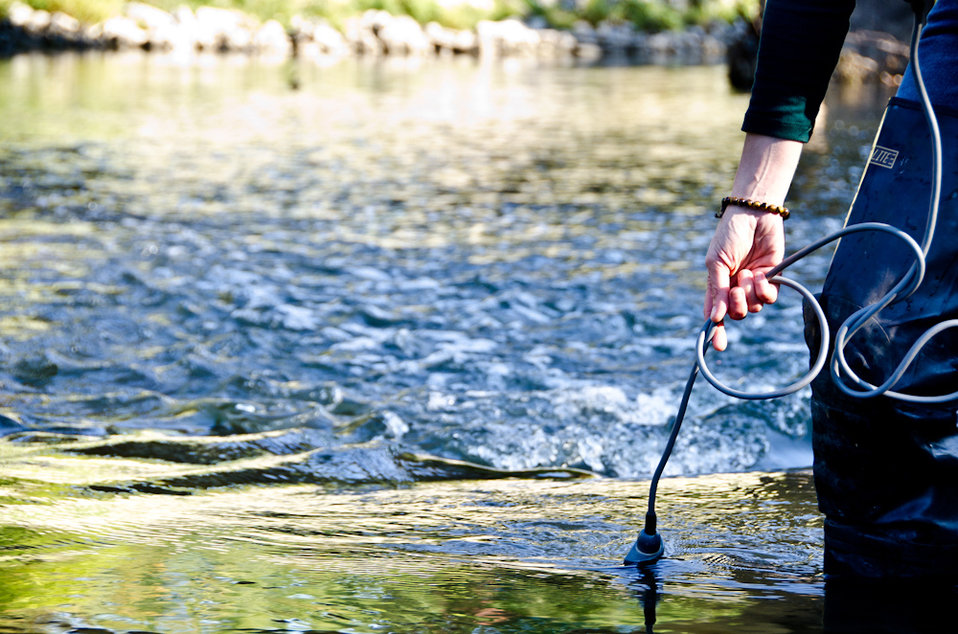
September 26, 2011 EPA tests water quality in Indian Creek, Kansas City, MO

US EPA Region 7 scientists Todd Phillips and Roberta Vogel-Leutung, test the water quality at Indian Creek in Kansas City, Mo. on September 26, 2011.

As part of Children’s Health Month, EPA Region 7 is partnering with Blue River Watershed Association, who is hosting an educational event for Center High School at the creek on October 7, 2011.

USEPA photo by Shannon Bond

EPA Region 7 serves IA, KS, MO, NE follow more EPA activity there @ www.facebook.com/USEPAHousatonic?ref=ts#!/eparegion7